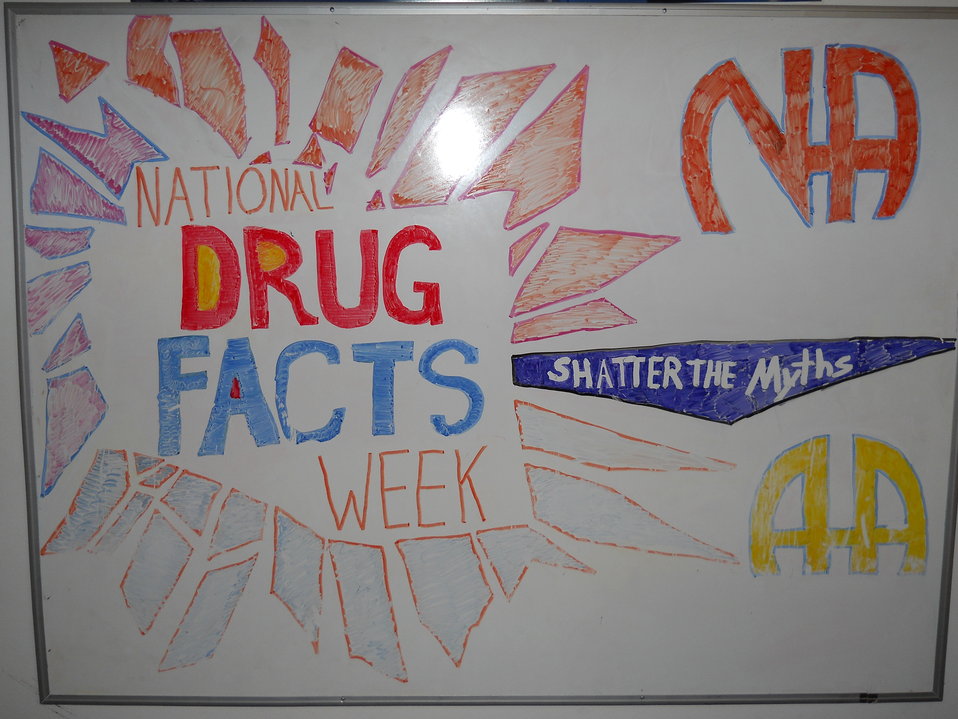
Burnside Group Home, NDFW 2013

Burnside, Ky. NDFW 2013 events. Main Event: Super Bowl Party on February 3rd. National Drug IQ Challenge before the game. Poster Contest with winner announcement during half-time of the Super Bowl, (prize will be a special privilege).